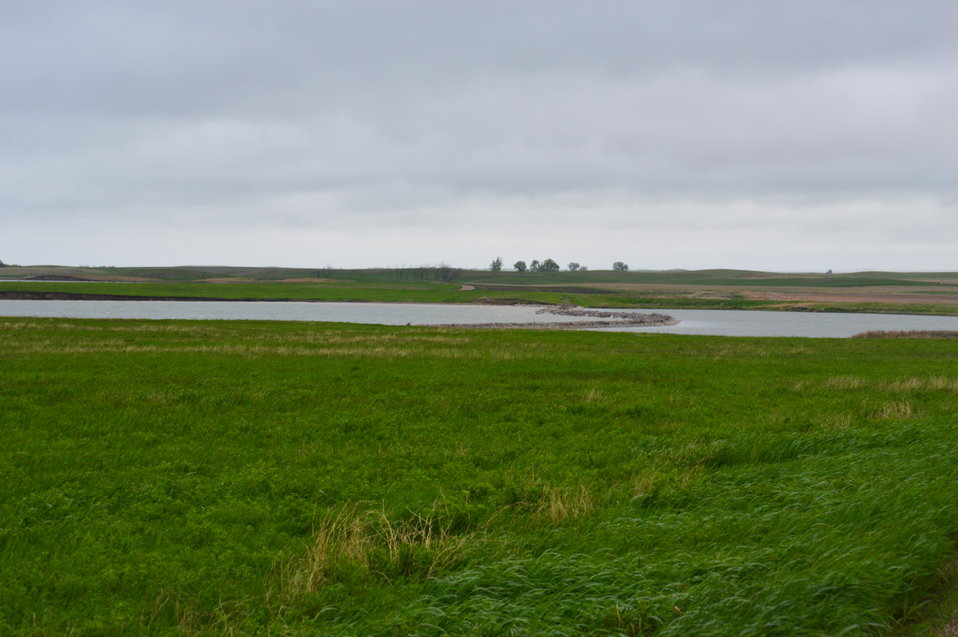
Audubon NWR

Scenery and wildlife and Audubon National Wildlife Refuge in North Dakota.